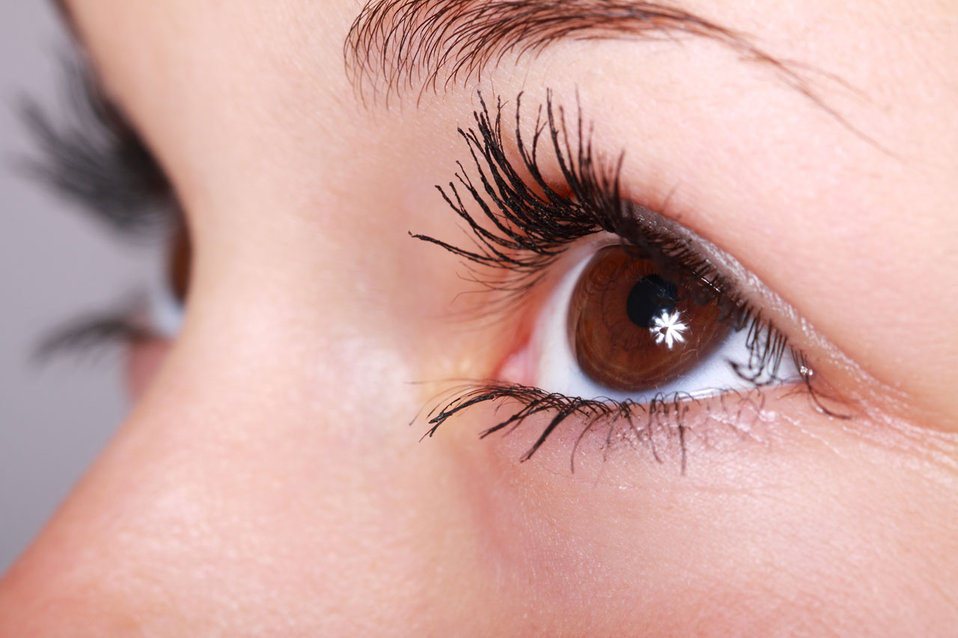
Closeup eye

Closeup image of eye.